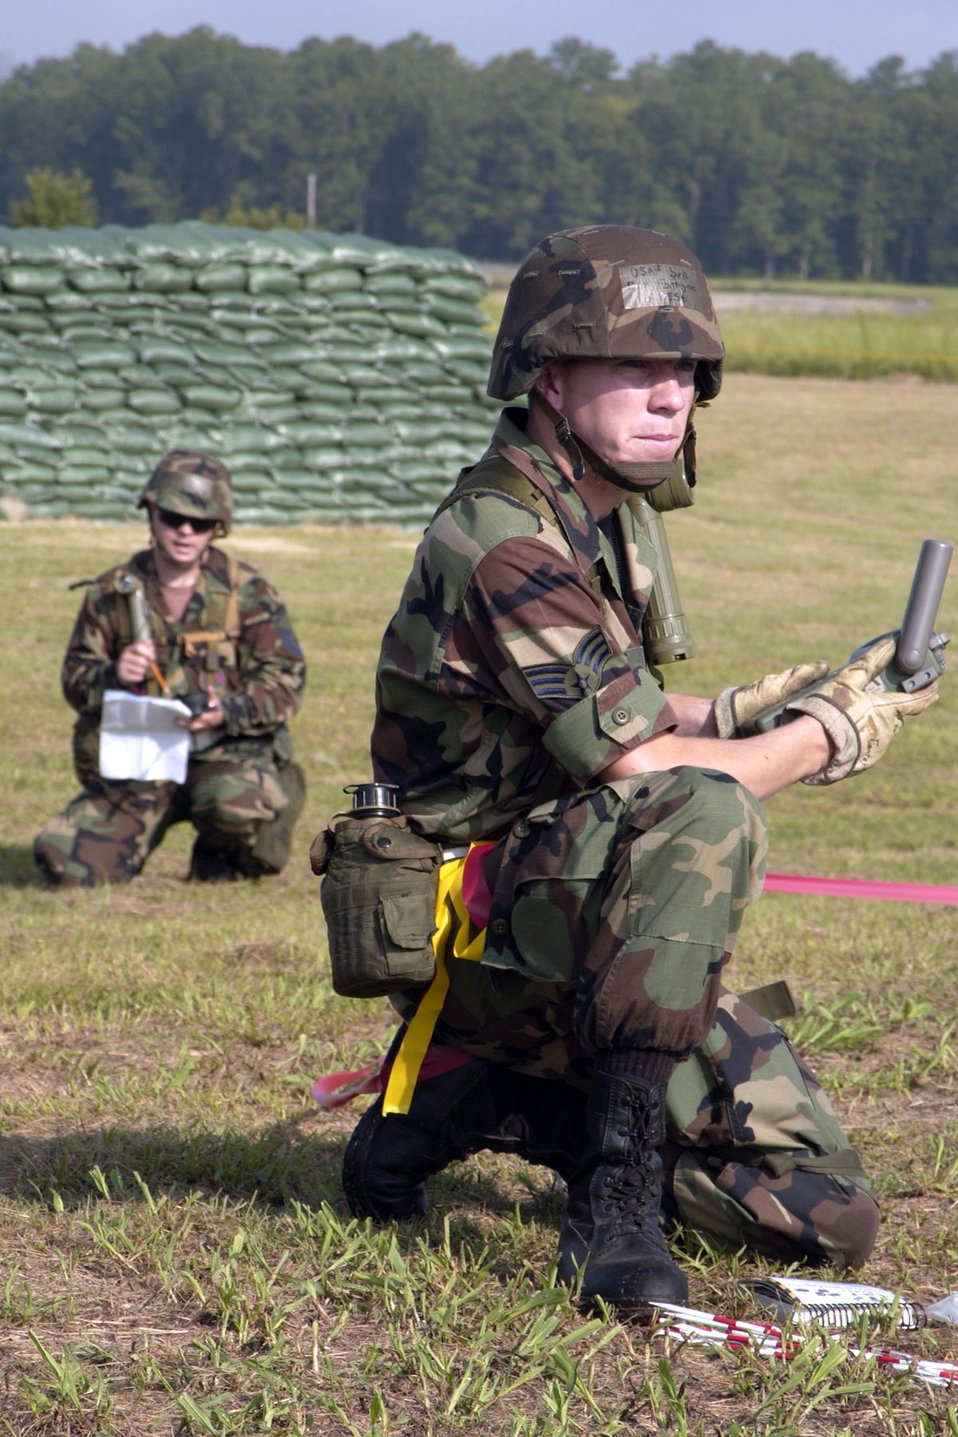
Inspection ready

Senior Airman Brett Fonteyne Jr. calls out Global Positioning System coordinates to Master Sgt. Scott Sellers at McEntire Air National Guard Station, S.C., on Aug. 19. Members of the 240th Combat Communications Squadron are undergoing an operational readiness inspection that evaluates their ability to process people and equipment.